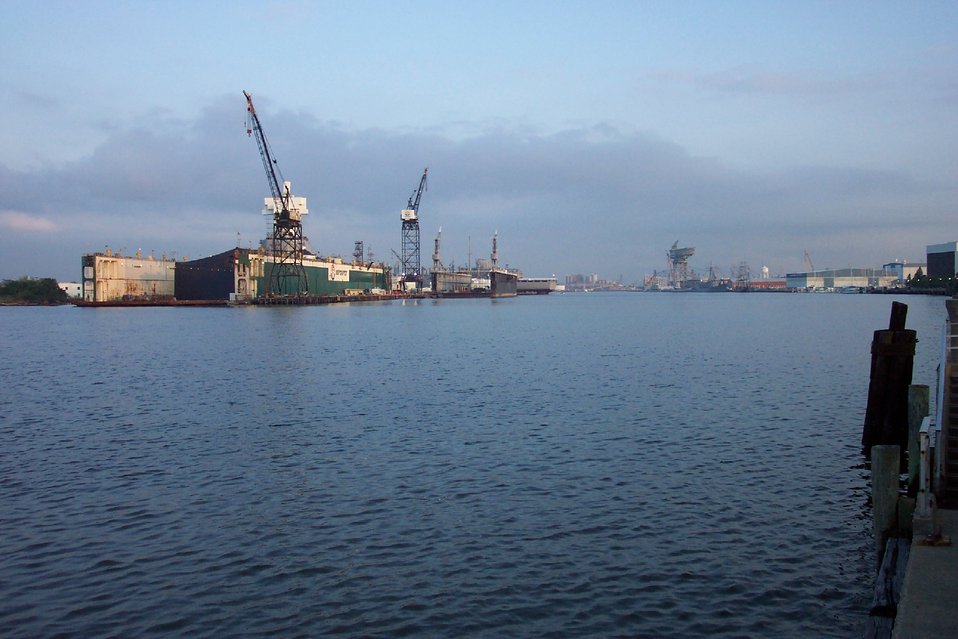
Shipyards on the Elizabeth River, Norfolk.